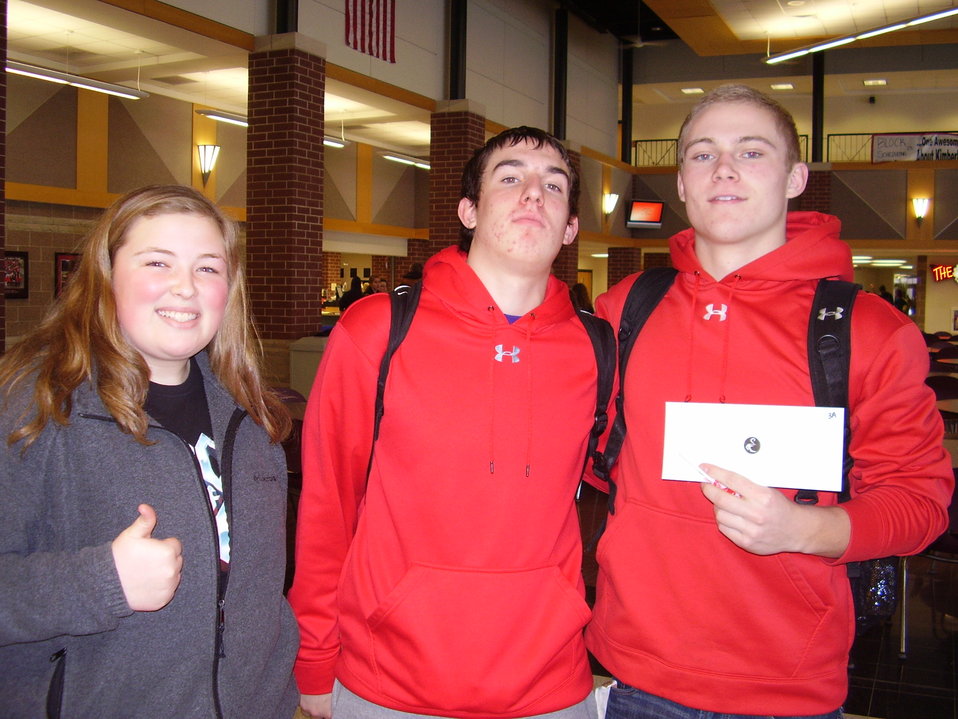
Wisconsin Teens and NDFW 2013

Combined Locks, Wis., Local teens participate in NDFW 2013 Events.